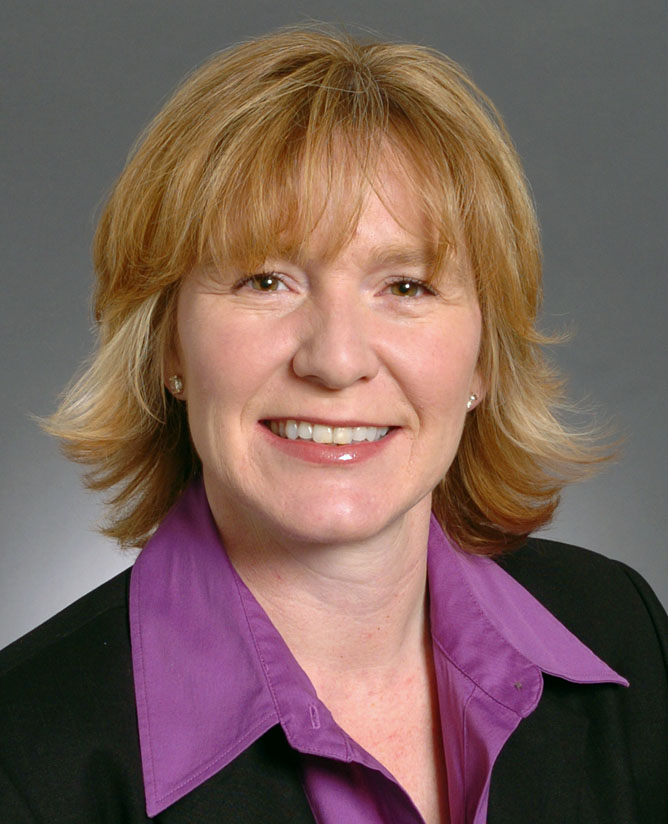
State Sen. Michelle Fischbach of Minnesota